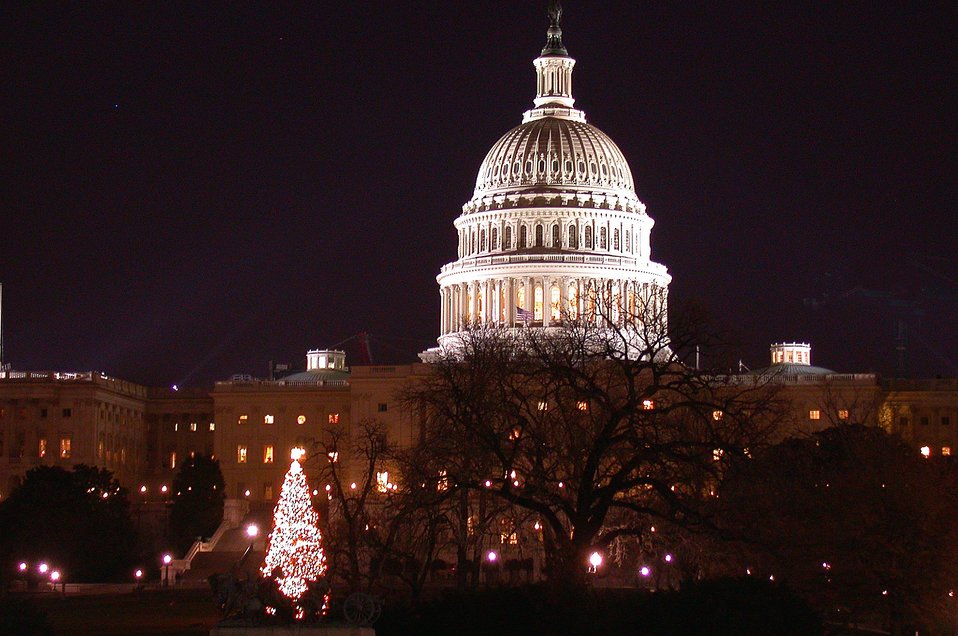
United States Capitol building.